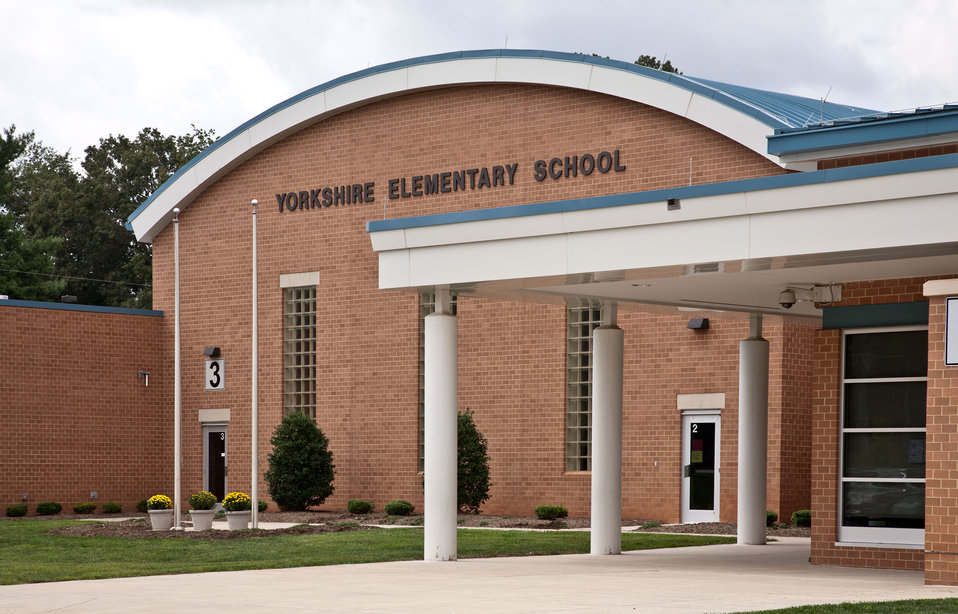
Yorkshire Elementary School in Manassas, VA. where more than 50 students from the 5th grade classes, participated in a taste testing of the new school lunch menu created to meet the new standards. Students tested a sample menu of black-bean filled pizza, pineapple spear, sunny broccoli and cauliflower toss, and an apple and celery cup with sunbutter dip (a peanut butter substitution), on Wednesday, September 5, 2012.